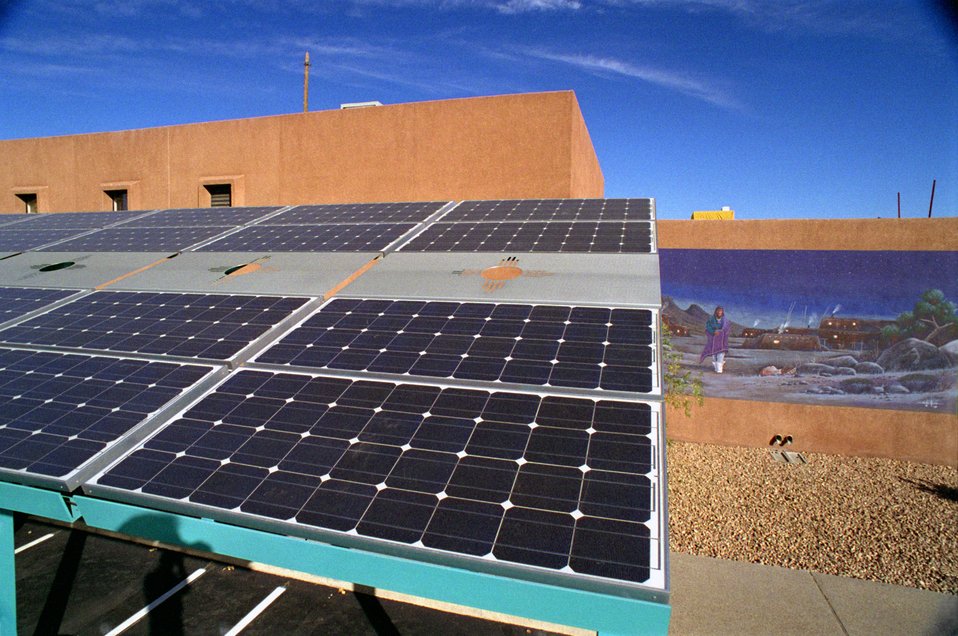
Largest Native American PV installation in New Mexico

At the Indian Pueblo Cultural Center in Albuquerque, NM, this PV carport stands ready to impress more than 400,000 visitors each year. The system delivers about 23 megawatt hours of clean electricity annually to the local utility grid (Public Service Company of New Mexico), making it the largest commercial PV system in New Mexico. Diversified Systems Manufacturing, a Native American owned and operated PV development company, was the contractor. The New Mexico Department of Energy, Minerals, and Natural Resources funded the project. Engineers from Sandia National Laboratories were responsible for the project's electrical design review. The project is the brainchild of Dave Melton, president of DSM and a tribal member of the Laguna Pueblo. It is also part of the Million Solar Roofs initiative, which seeks to place solar energy systems on one million roofs in the United States by 2010.